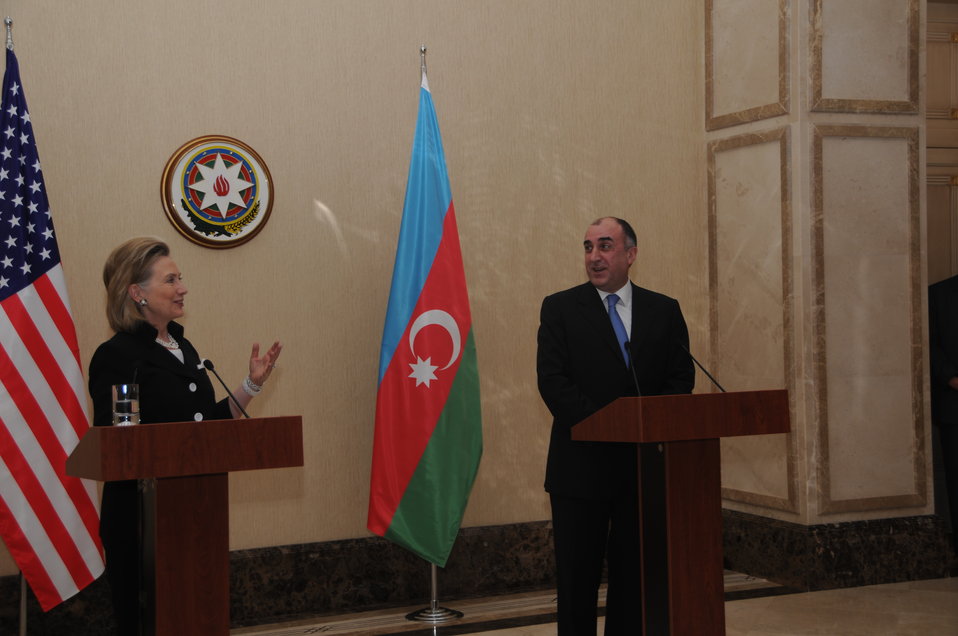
Secretary Clinton Responds to a Question at a Press Conference With Azerbaijani Foreign Minister Mammadyarov

U.S. Secretary of State Hillary Rodham responds to a question at a press conference with Azerbaijani Foreign Minister Elmar Mammadyarov in Baku, Azerbaijan, on July 4, 2010.